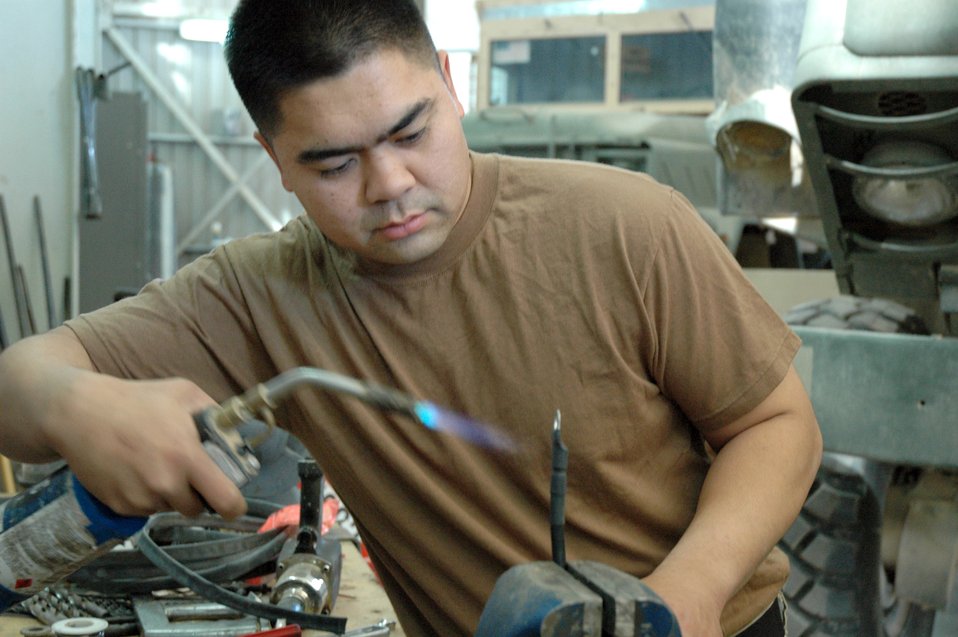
Mechanics turn wrenches to save lives

TIKRIT, Iraq (AFPN) -- Staff Sgt. Mel Perero heat shrinks insulation on a starter cable for a Humvee. Mechanics assigned to the 732nd Expeditionary Logistics Readiness Squadron at base Speicher maintain armored gun trucks used by the Air Force convoy security detachment. Sergeant Pereroa deployed from Misawa Air Base, Japan.